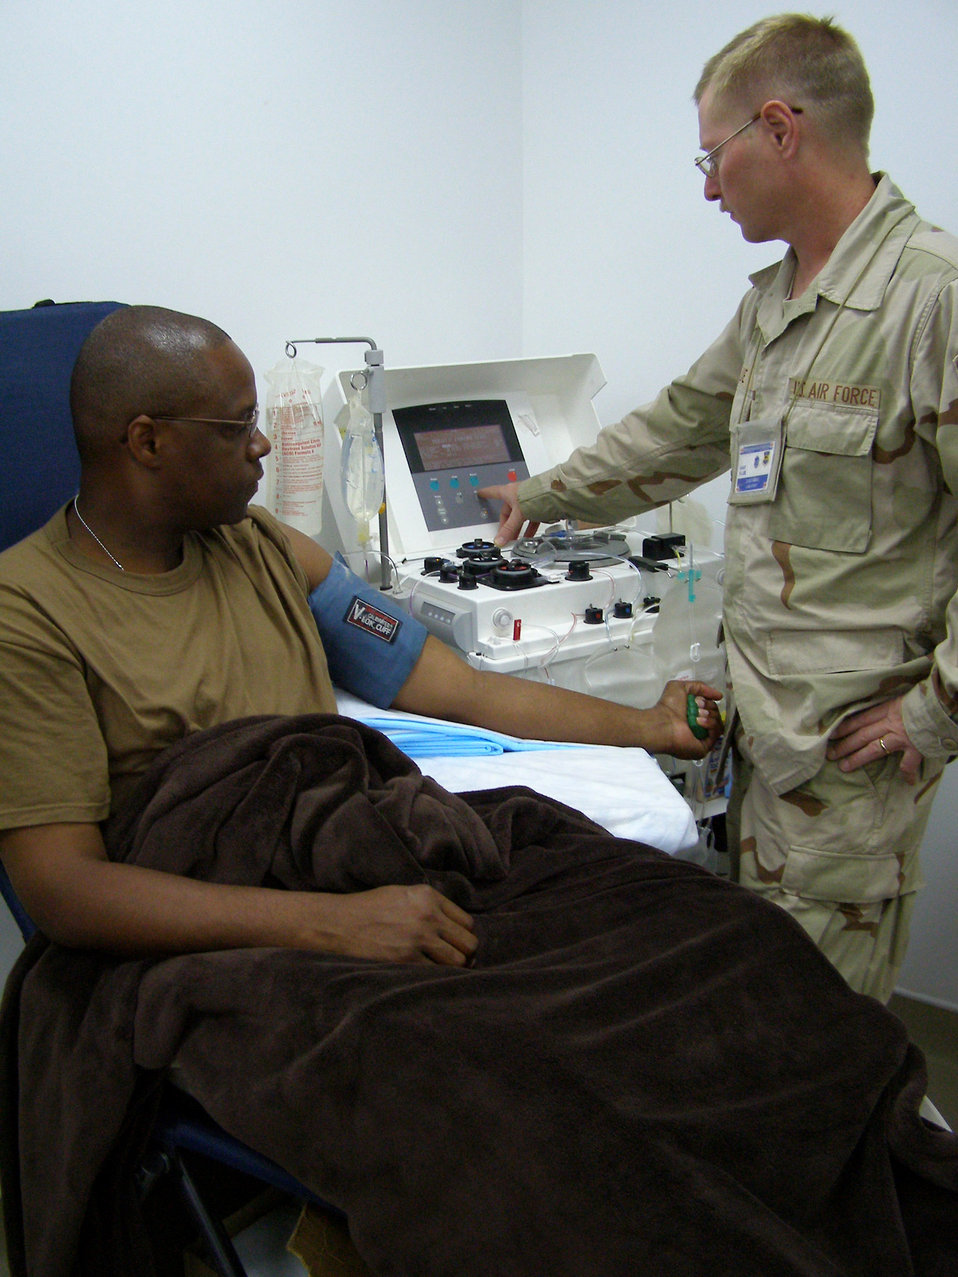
Balad collects first universal plasma donation

Master Sgt. Les Blue checks a haemonetics machine while Tech. Sgt. Darrin Sewer sits in the donor's chair Aug. 5 at Balad Air Base, Iraq. Sergeant Sewer donated the first plasma in the area of responsibility. Sergeant Sewer has type AB plasma, the universal plasma type. The plasma will be used to supplement current supplies that are sent from the states. Sergeant Blue is a lab technician and NCO in charge of the Air Force Theater Hospital Apheresis Center. Sergeant Sewer is the NCO in charge of the 332nd Expeditionary Communications Squadron help desk.